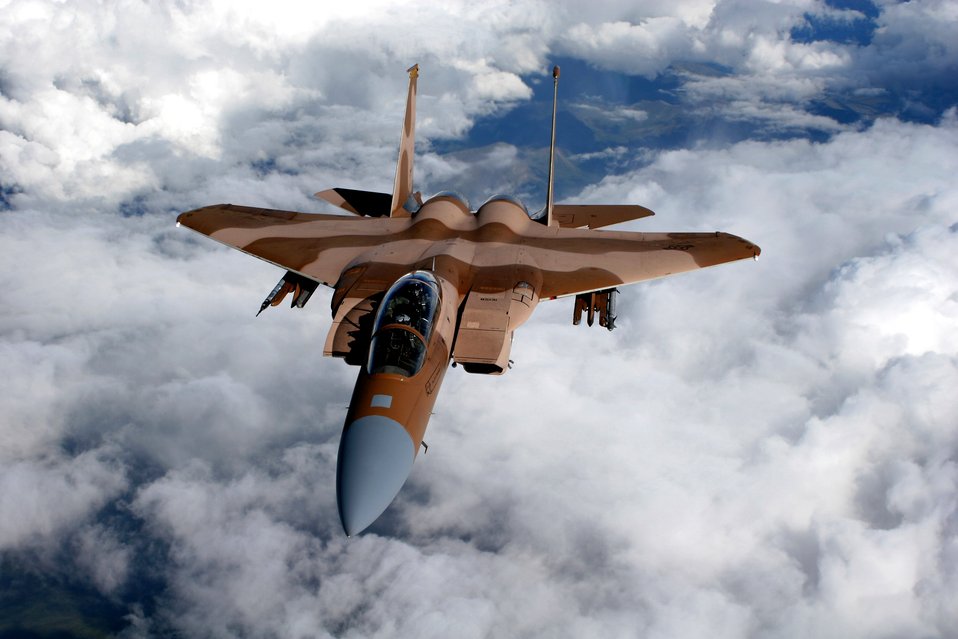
Aggressor at Red Flag Alaska

An F-15C Aggressor from the 65th Aggressor Squadron at Nellis Air Force Base, Nev., flies over a mountain range on a refueling mission at Red Flag-Alaska July 25. Red Flag-Alaska enables aviation units to sharpen their combat skills by flying simulated combat sorties in a realistic threat environment. More than 80 aircraft and 1,500 servicemembers from six countries are participating in the exercise July 12 to 27.